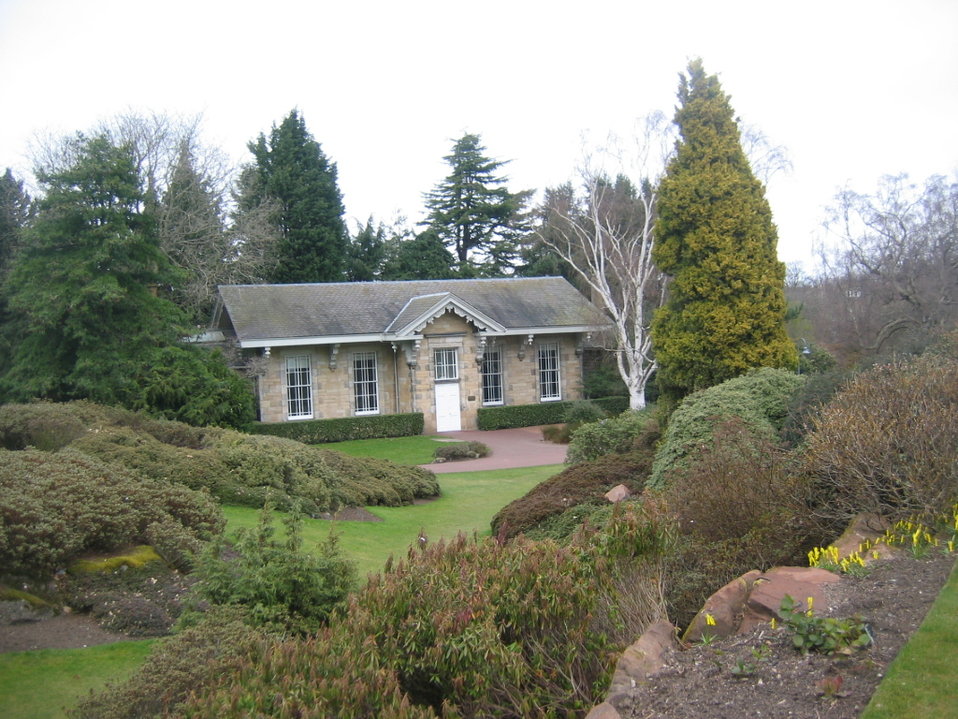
Edinburgh Botanic Garden, Caledonia Hall